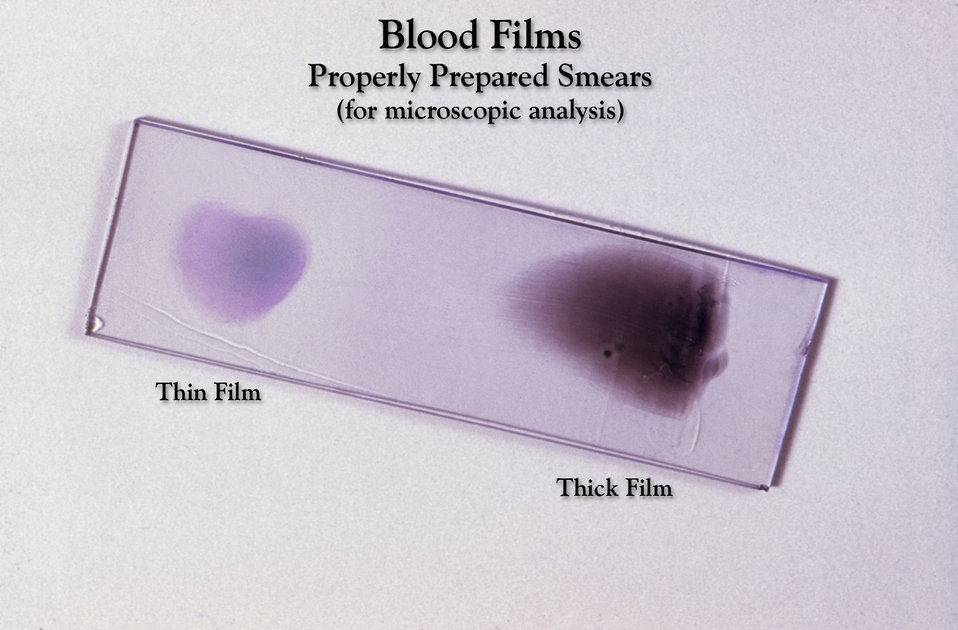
This Giemsa stained slide depicts an example of properly prepared thick and thin film blood smears to be examined.